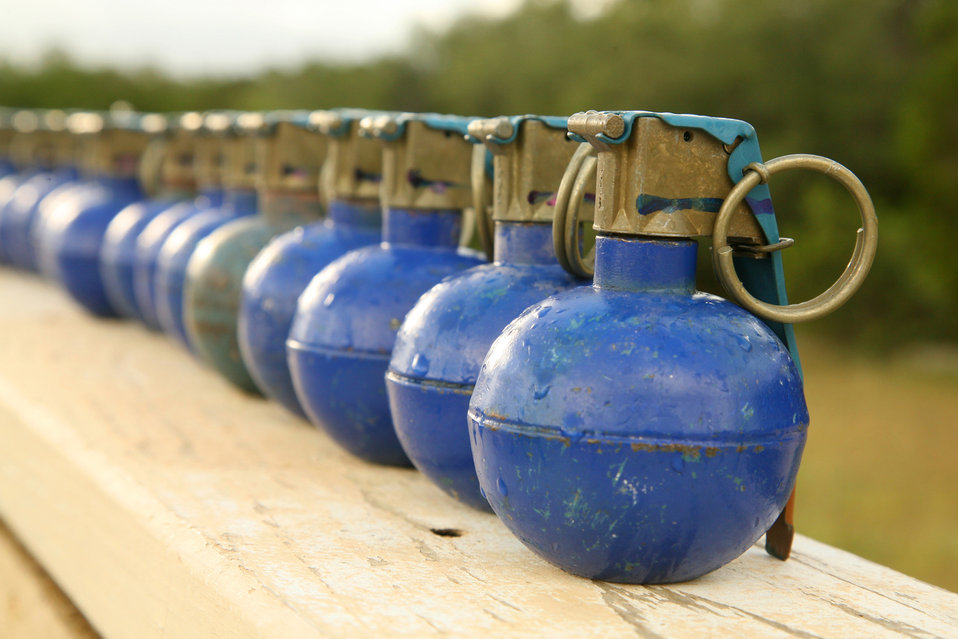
Training with a bang!

A row of M-67 training grenades sit on a bay ledge June 18 at Camp Bullis, Texas.